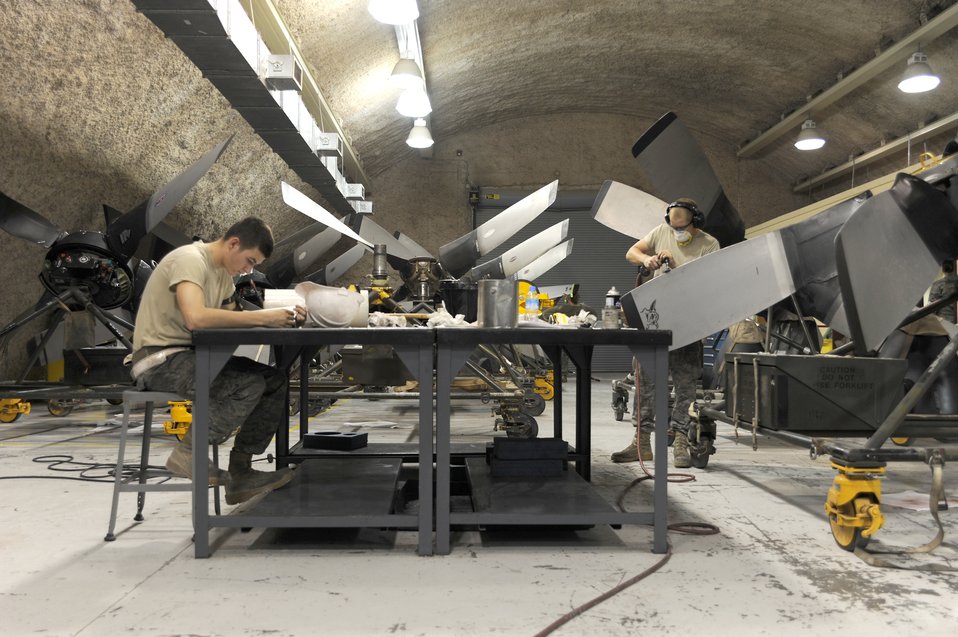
C-130 propeller blades

Jet engine mechanics work on the installation of C-130 Hercules propeller blades Aug. 30, 2010, at a base in Southwest Asia. The Airmen are with the 379th Expeditionary Maintenance Squadron.